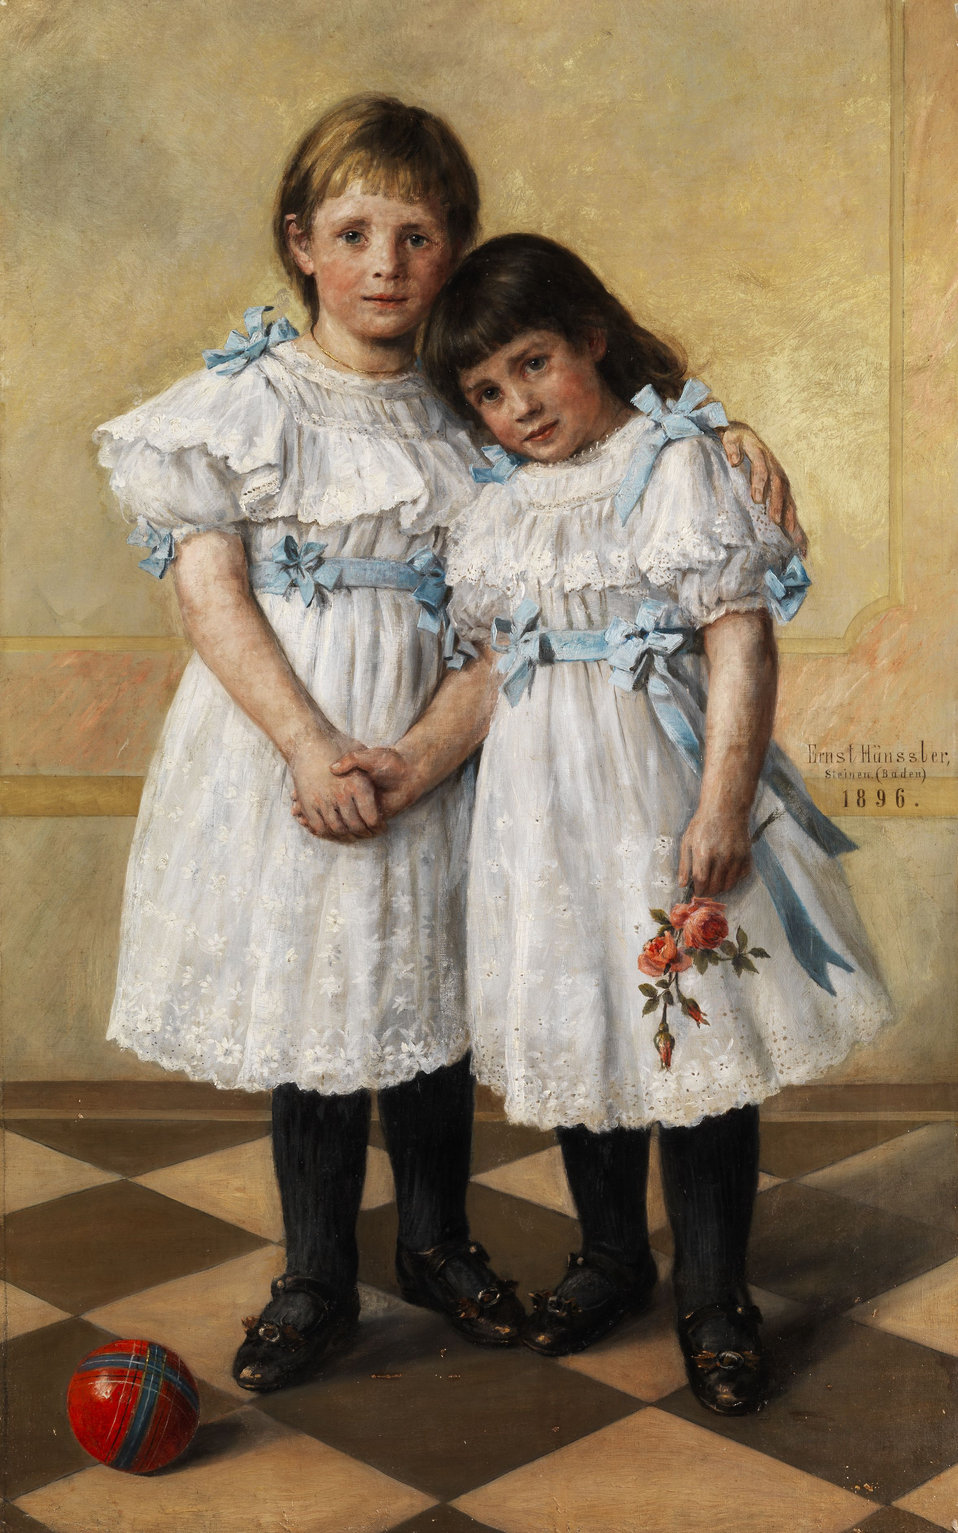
Deutsch: Doppelbildnis zweier Mädchen.Öl auf Leinwand. 108 x 66,5 cm. Signiert, ortsbezeichnet „Steinen“ (Baden) und datiert „1896“.